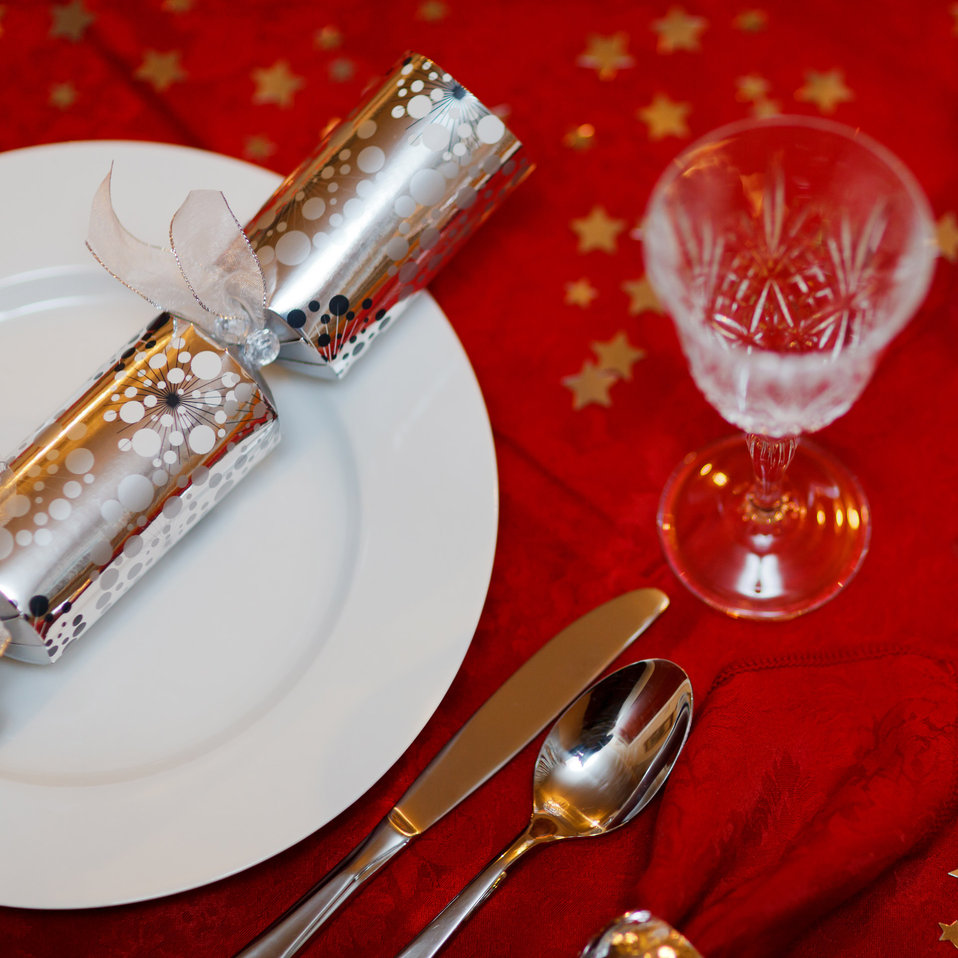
Christmas dinner plate with decorations on a red tablecloth.